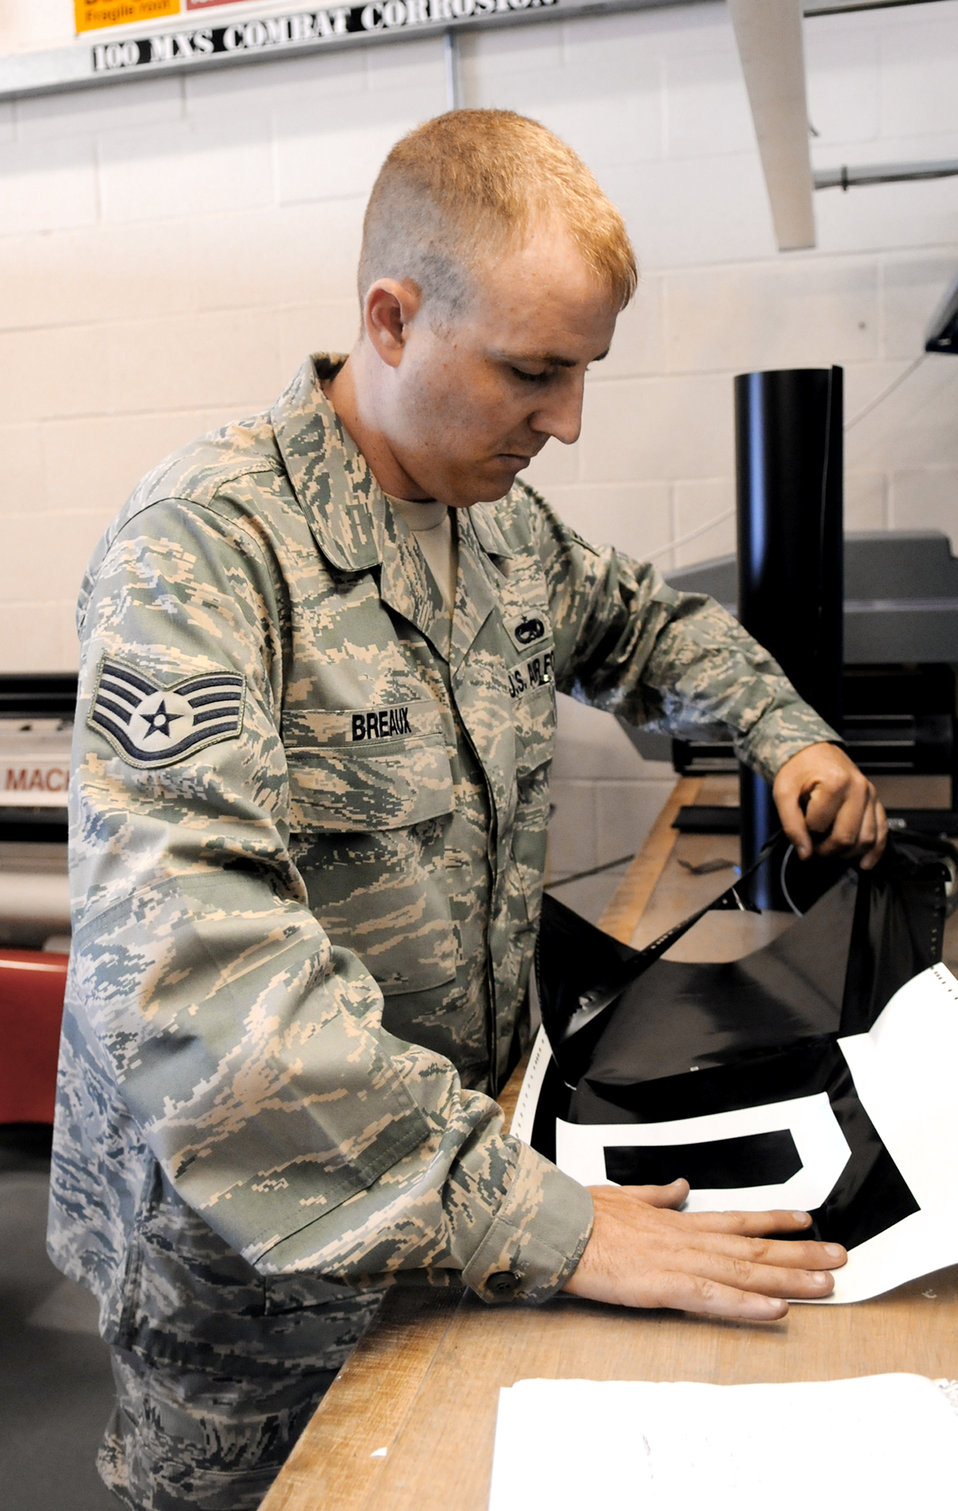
Stick 'em up: Corrosion control shop develops decals for rapid recognition

Staff Sgt. Christopher Breaux removes excess material from a scale decal of the